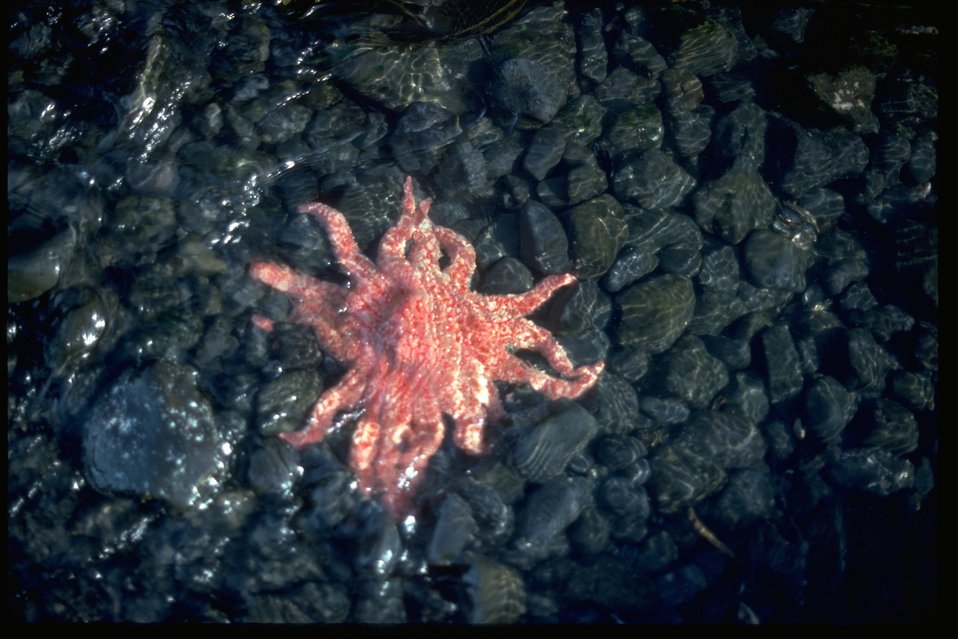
Sun flower star at Cobble Beach tidepools.